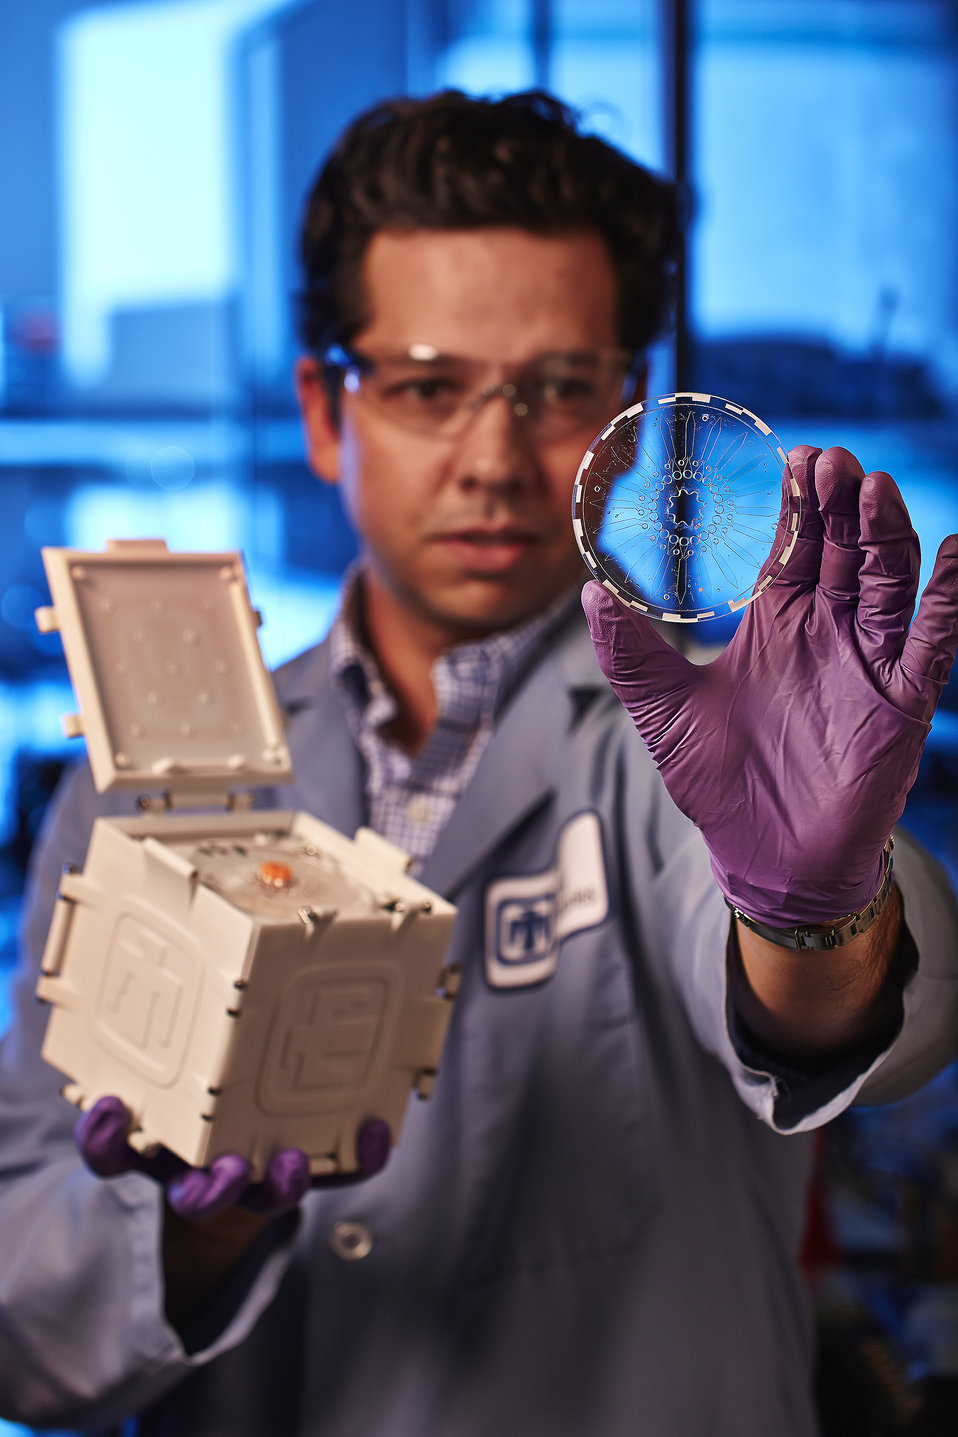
Sandia's SpinDx device features centrifugal microfluidics, or lab-on-a-diskt; technology, which uses centrifugal forces to manipulate samples and reagents through microfluidic channels implanted on disks that are of the same size as a standard CD or DVD.